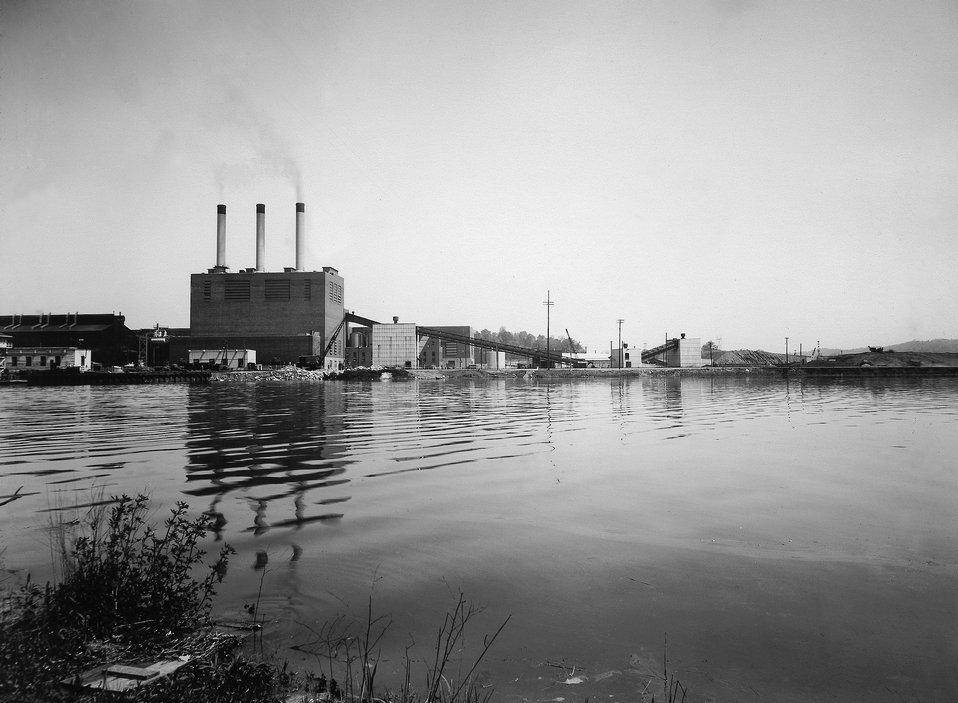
Construction of Steam Plant at K-25 Oak Ridge

PK-25-36A DOE photo by Ed Westcott

Construction of Steam Plant at K-25 Oak Ridge Tennessee 8-1945